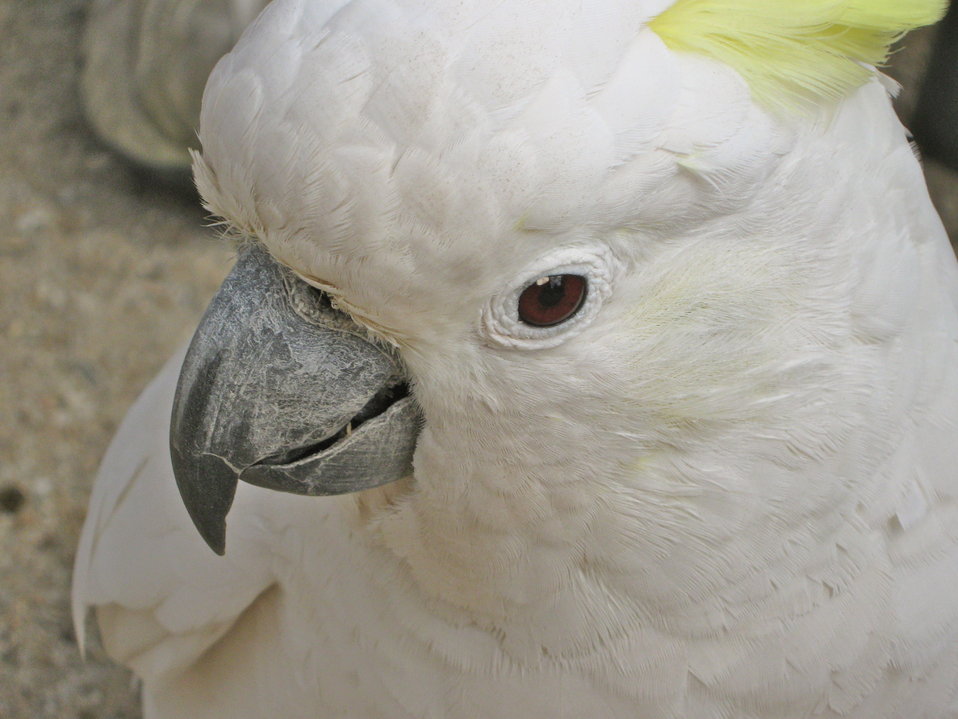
Cacatua galerita Sulphur-crested Cockatoo; close-up of head.